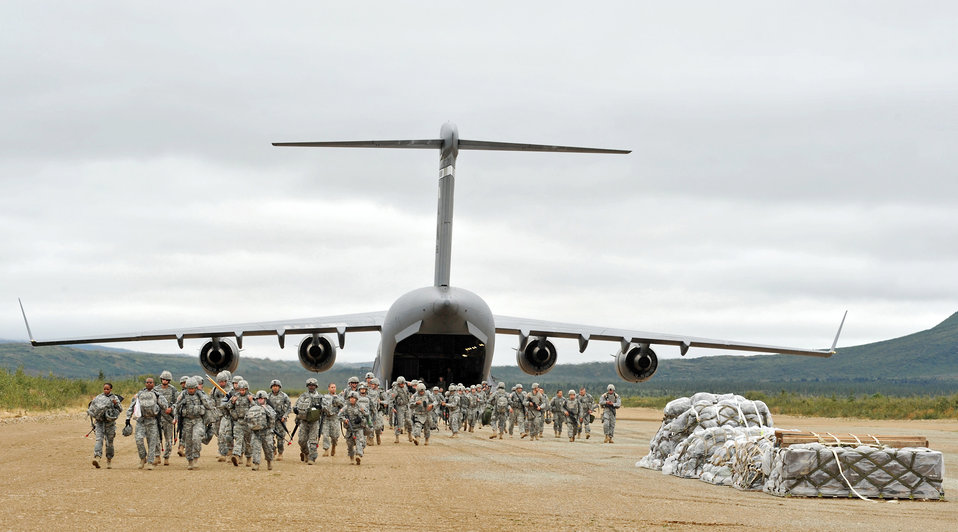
Elmendorf Airmen support Army's Operation Arctic Response

Army Soldiers from the 17th Combat Service Support Battalion from Fort Richardson, Alaska, exit a C-17 Globemaster III from the 517th Airlift Squadron Aug. 24 at the Donnelly Landing Zone, Alaska. The aircraft and its aircrew assisted in deploying 120 Soldiers for Operation Arctic Response, an Army Emergency Deployment Readiness Exercise. Two C-17s flew to Donnelly and delivered five pallets, two Humvees, a trailer and a passenger carrier.